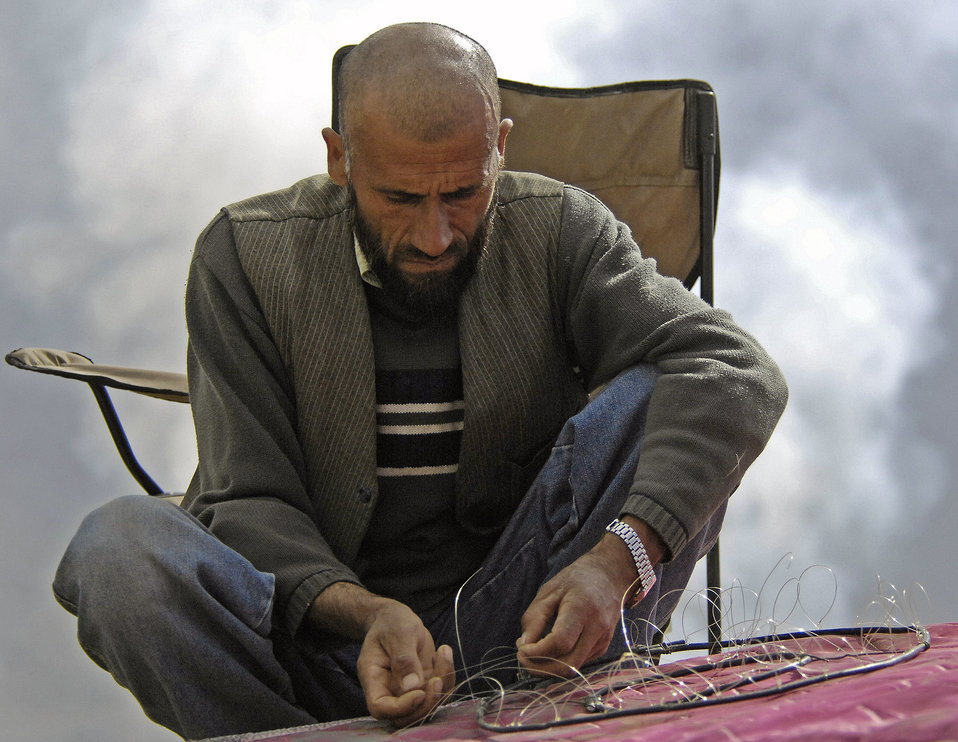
Safety experts spearhead efforts to minimize bird strikes

An Afghan falconer prepares a handmade snare trap for birds nesting near Bagram Airfield, Afghanistan. The 455th Air Expeditionary Wing safety office hired three local falconers to help clear out areas near the flightline that were swarmed with thousands of birds. After a week of work, the falconers had caught or killed more than 250 birds surrounding the flightline and have apparently scared off most of the remaining birds over the past three weeks.